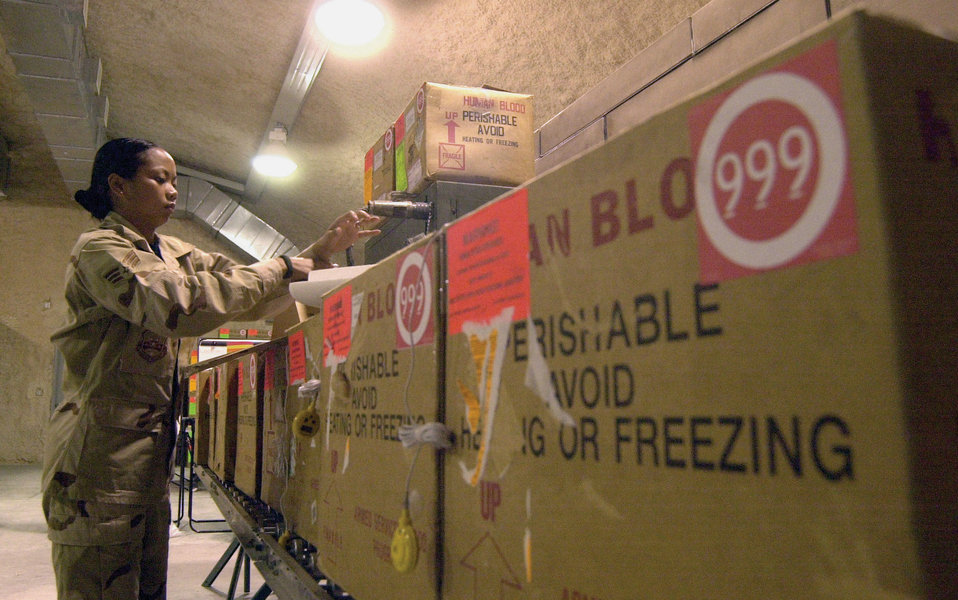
Blood transfer center essential to mission

SOUTHWEST ASIA -- Senior Airman Happy Sanchez inventories several boxes of red blood cells from a shipment. She is assigned to the blood transshipment center at a forward-deployed location here.